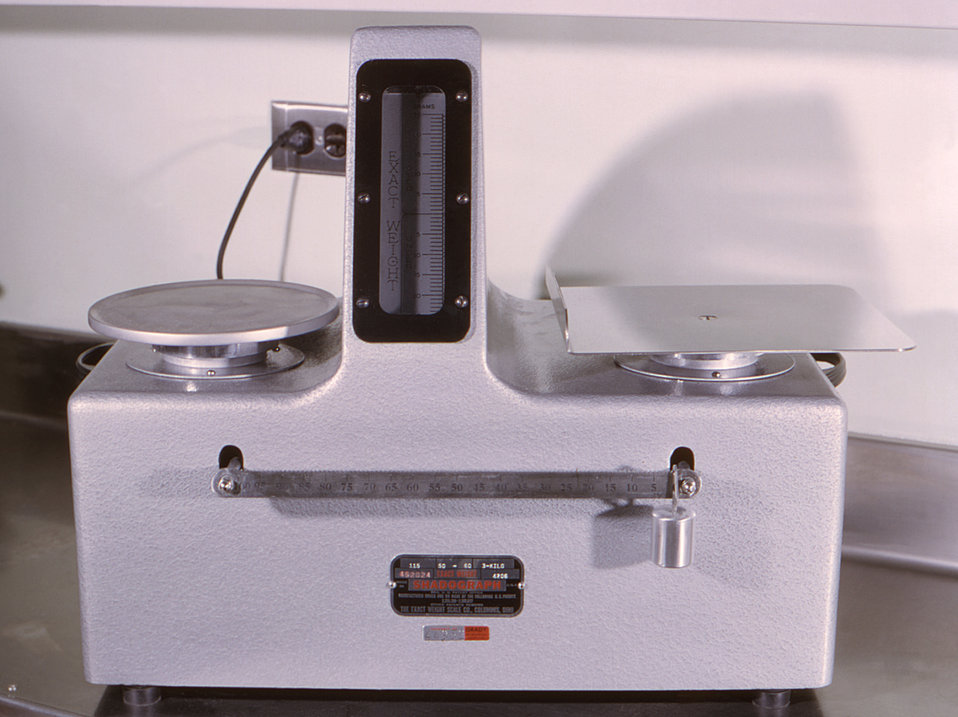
This historic image from 1964 depicts a Shadograph� balance that was used in the Centers for Disease Control's laboratories.